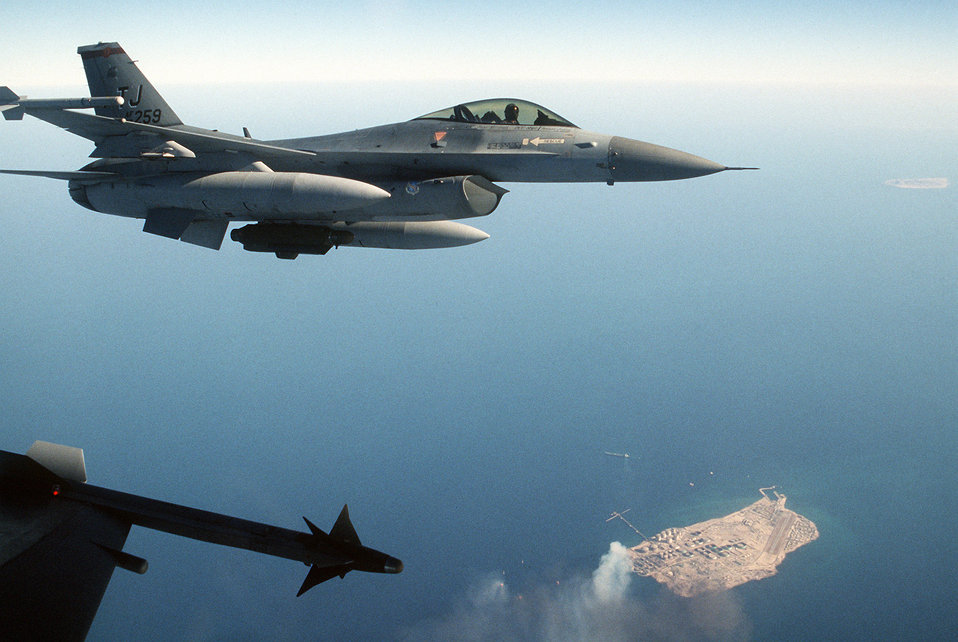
F-16C Fighting Falcon

1990's -- An air-to-air view of an F-16C Fighting Falcon fighter aircraft of the 401st Tactical Fighter Wing during Operation Desert Shield.